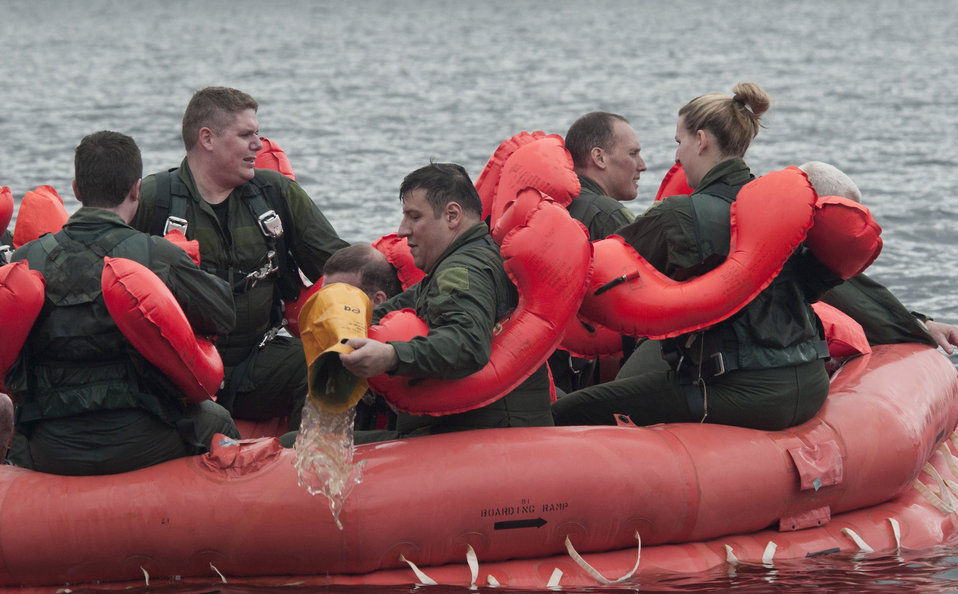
Water survival training

Airmen remove water from a 20-person life raft June 11, 2011, during aircrew survival training in the St. Croix River near Hastings, Minn.